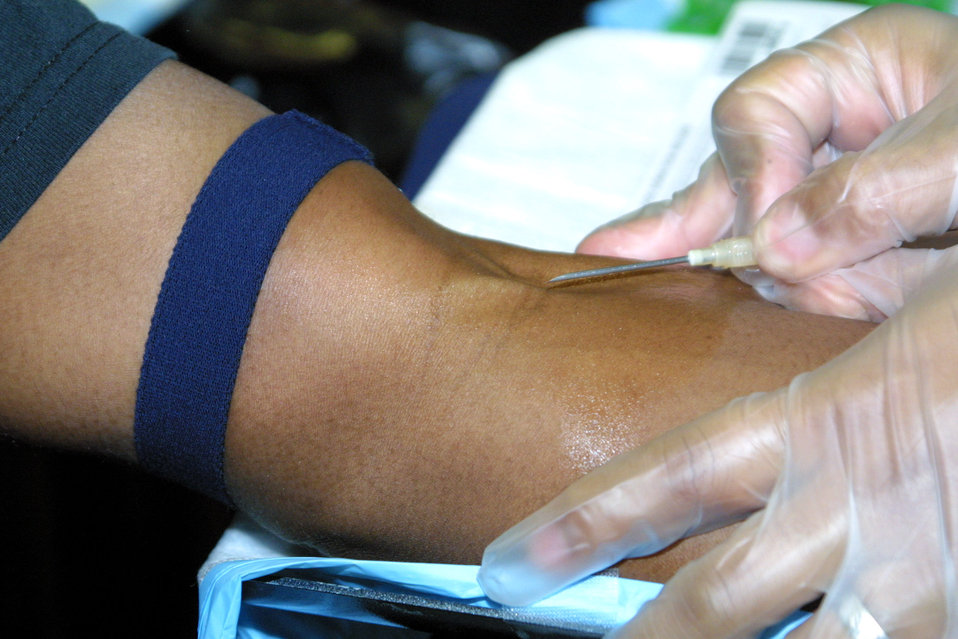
It's better to give

An Armed Services Blood Program member prepares to take a donation from a donor at Pope Air Force Base, N.C.